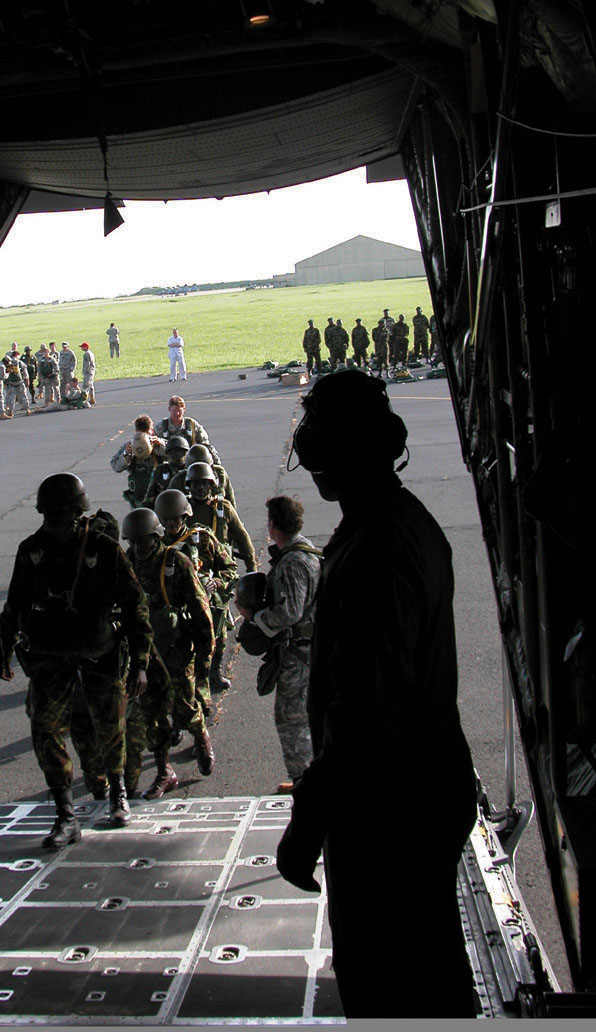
Airmen join Soldiers taking Kenya military to new heights

KENYA -- Kenyan and American paratroopers board a C-130 Hercules en route to a drop zone June 6. More than 140 paratroopers left the Kenyan army base landing strip and made successful jumps during the three-day, 14-drop mission.